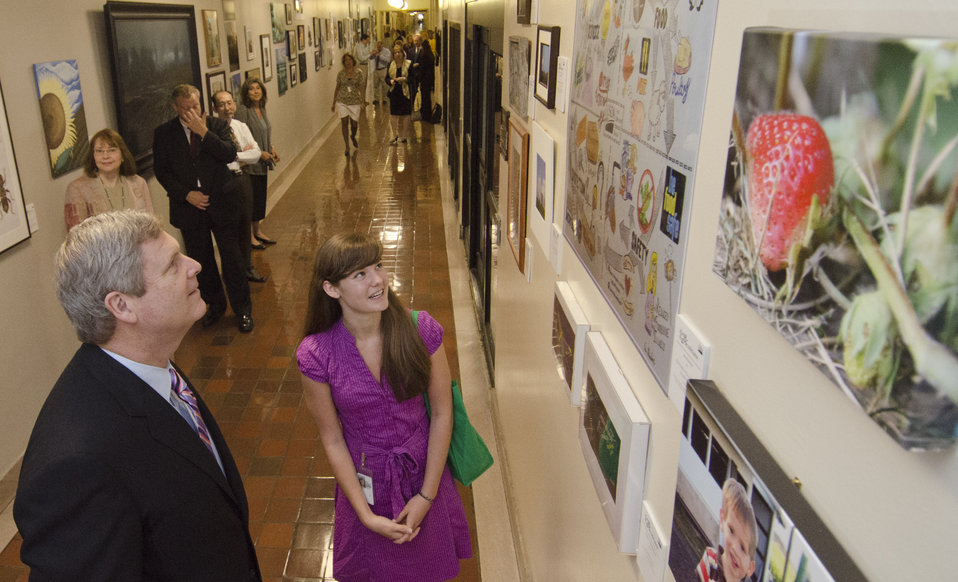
Agriculture Secretary Tom Vilsack visits the gallery of winning entries and talks with Erin Rhinehart at the Art and Agriculture competition in the South Building, Washington, D.C on Thursday, May 31, 2012. U.S. Department of Agriculture (USDA) full-time and part-time employees submitted art based on ten agricultural themes. The event was part of USDA's 150th Anniversary celebration and the winning artwork is on display from May 15 through December 31, 2012. Artistic expression is a creative outlet that is vital for an individual to grow and develop in their environment.